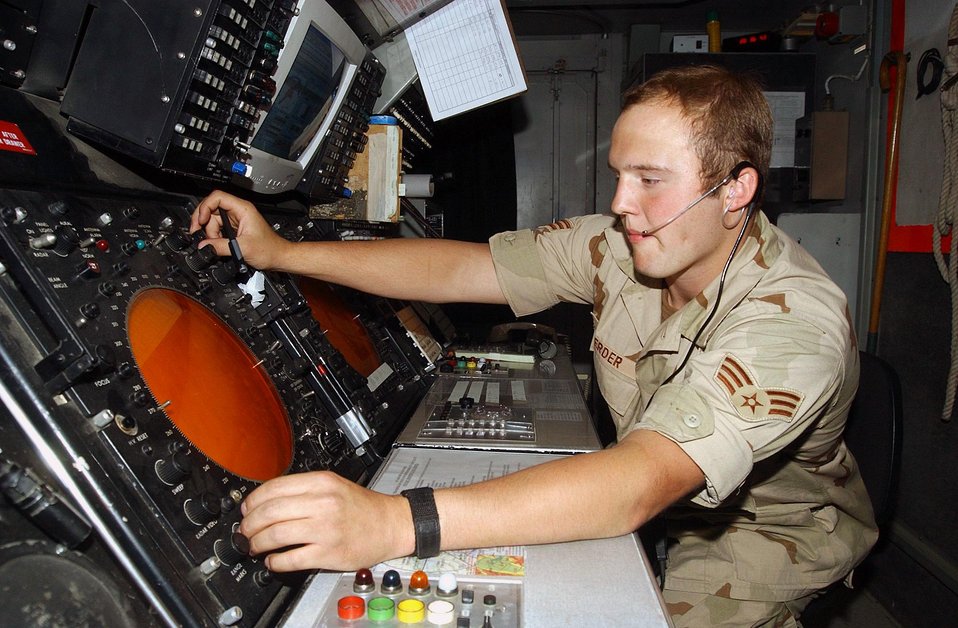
One of two

BAGRAM AIR BASE, Afghanistan - Senior Airman Miles Herder, 455th Expeditionary Operations Group, guides an aircraft into Bagram Airfield through radio contact.